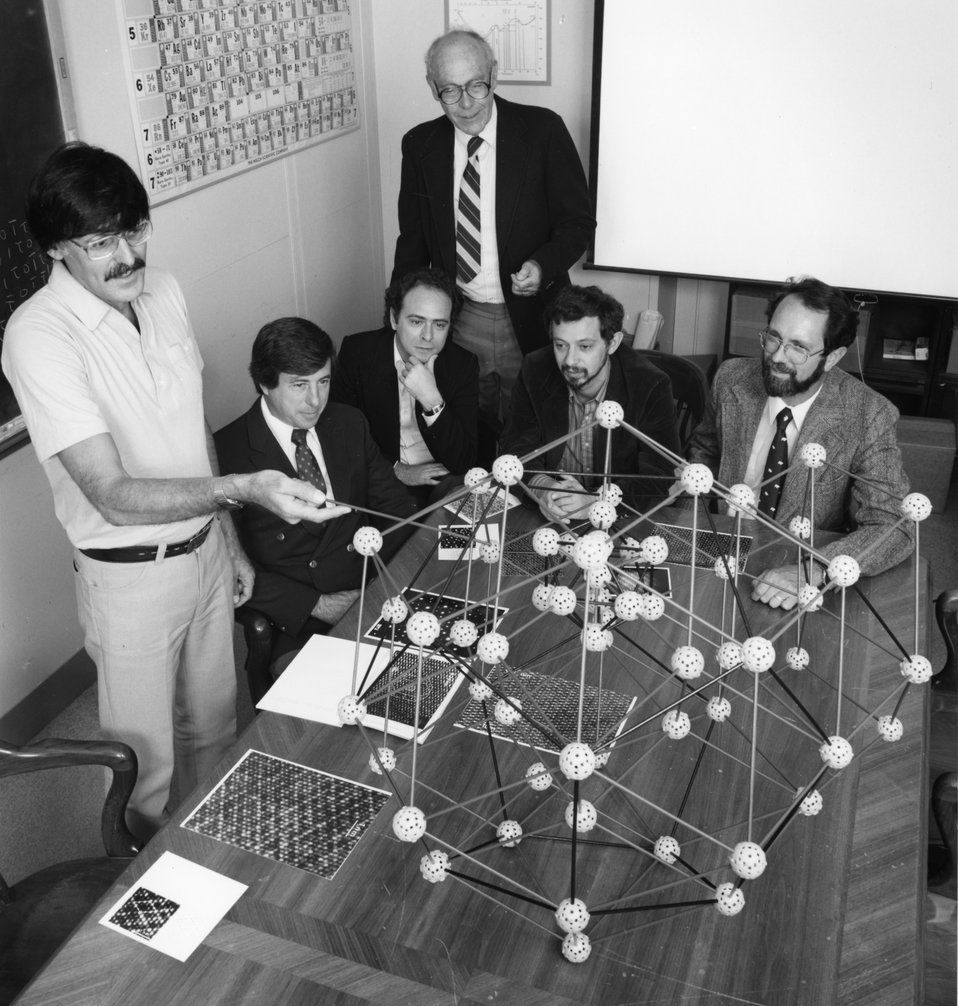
NIST Colleagues Congratulate Shechtman on Nobel Chemistry Prize

Meeting at the National Institute of Standards and Technology (NIST)* in 1985 just months after shaking the foundations of materials science with publication of his discovery of quasicrystals, Daniel Shechtman, winner of the 2011 Nobel Prize in Chemistry, discusses the material’s surprising atomic structure with collaborators. From left to right are Shechtman; Frank Biancaniello, NIST; Denis Gratias, National Science Research Center, France; John Cahn, NIST; Leonid Bendersky, Johns Hopkins University (now at NIST); and Robert Schaefer, NIST.

*NIST was known as the National Bureau of Standards at the time.